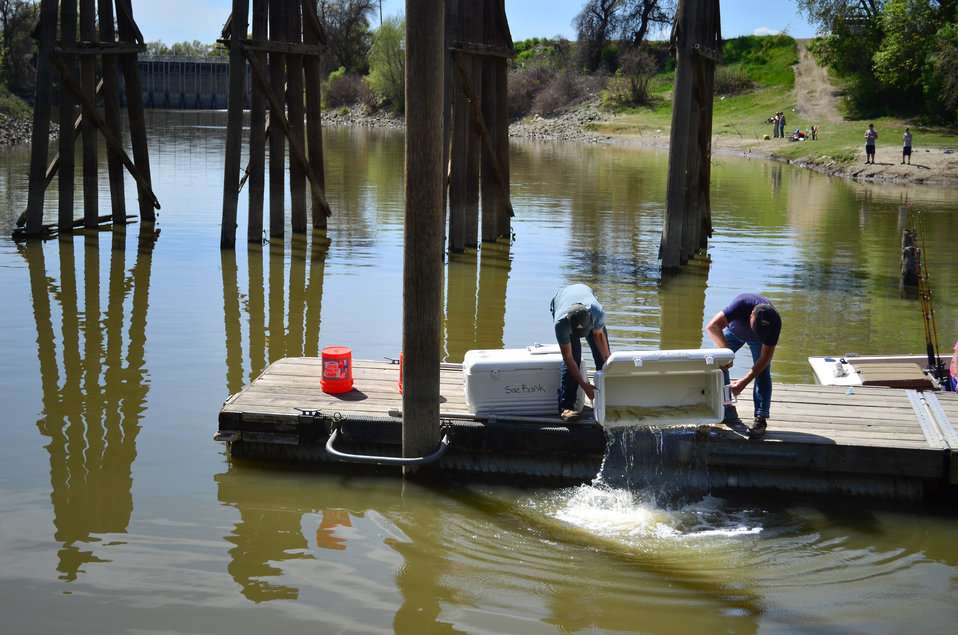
Releasing tagged steelhead at Knights Landing

Brian Mulvey (right) and Mike Fong from the U.S. Army Corps of Engineers Sacramento District release a batch of acoustically tagged steelhead trout into the Sacramento River March 26, 2013, in Knights Landing, Calif. The juveniles' downstream behavior will be studied for 75 miles and will help researchers better evaluate habitat restoration work under the Sacramento River Bank Protection Project, a joint flood risk reduction effort between the district and the state's California Central Valley Flood Protection Board to repair riverbank erosion along the Sacramento River and its tributaries.